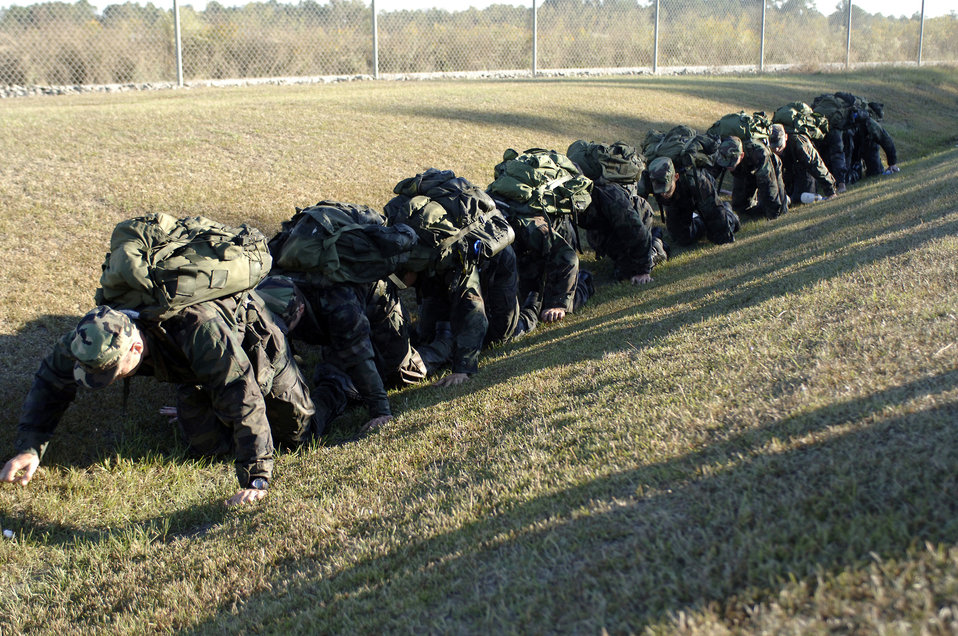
Creating CROs

MOODY AIR FORCE BASE, Ga. (AFPN) -- Ten combat rescue officer candidates test their endurance during a series of events including a six-mile formation run and a four-mile minimum road march with 40-pound rucksacks. These events ensure each candidate meets the stringent requirements of a CRO's duties.